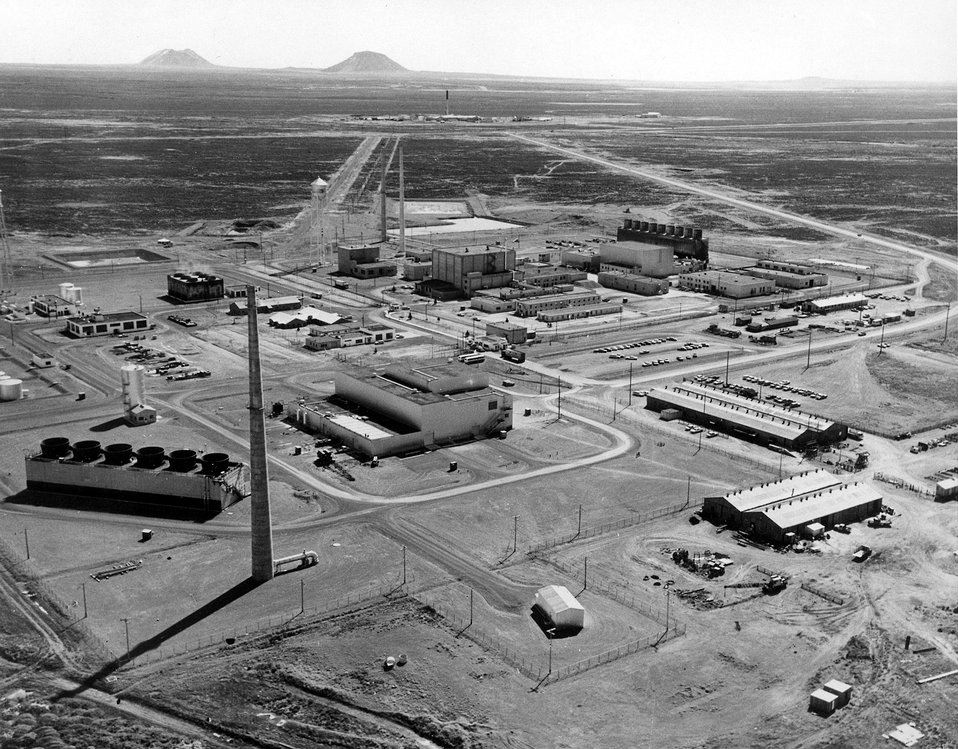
National Reactor Testing Station, Idaho... An aerial view of the Test Reactor Area at the National Reactor Testing Station in Idaho. Circa 1967.